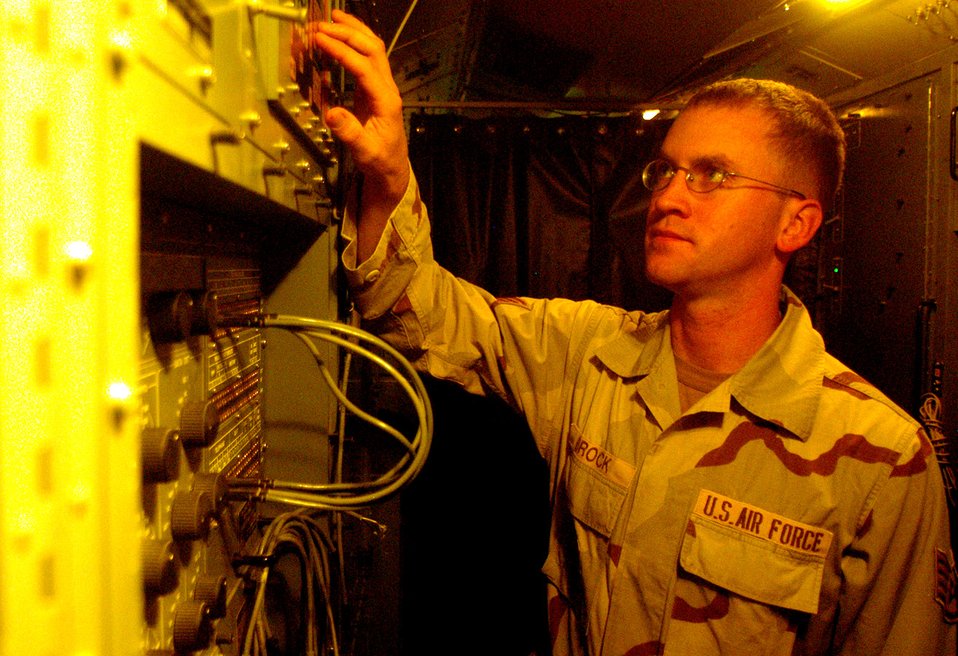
Squadron monitors sky over Afghanistan

Staff Sgt. Kyle Brock makes adjustments in an operations module at the 73rd Expeditionary Air Control Squadron at Kandahar Airfield, Afghanistan, on Saturday, June 3. Sergeant Brock is a computer maintenance technician deployed from Spangdahlem Air Base, Germany.